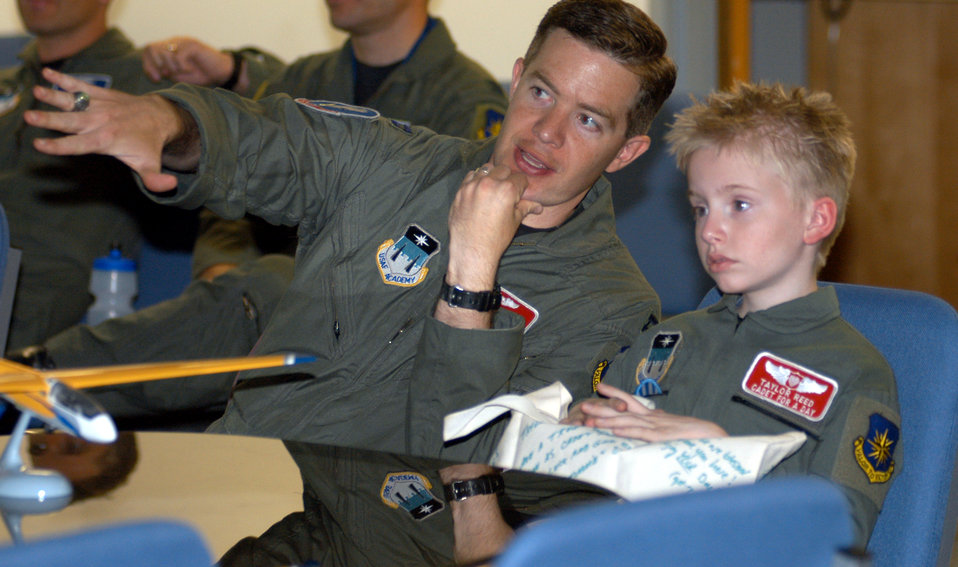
Cadet for a day

U.S. AIR FORCE ACADEMY, Colo. -- Taylor Reed listens to a briefing from Capt. Jon Veazey. Through the Make-A-Wish Foundation, 10-year-old Taylor and his family toured here April 16. Taylor is from Thornton, Colo., and has cystic fibrosis. His tour included a flight simulator ride, meeting the falcon mascots and marching to lunch with the cadet wing. Captain Veazey is an airspace and flyover manager for the 34th Operations Support Squadron here.